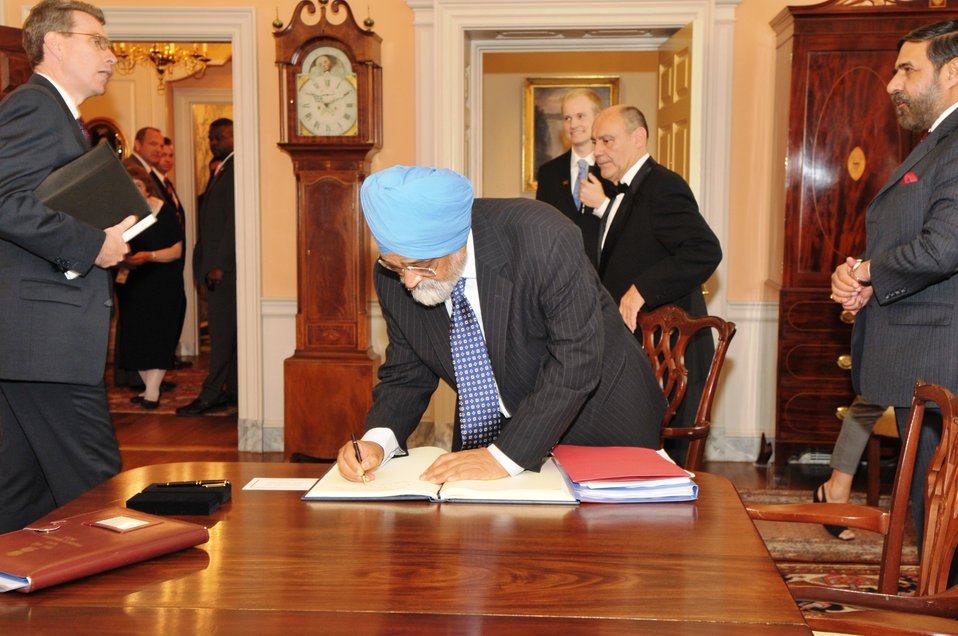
Indian Deputy Chairman of the Planning Commission Singh Signs the Guest Book

Indian Deputy Chairman of the Planning Commission Montek Singh Ahluwalia signs the U.S. Secretary of State's Guest Book at the U.S. Department of State in Washington, D.C., on June 22, 2010.